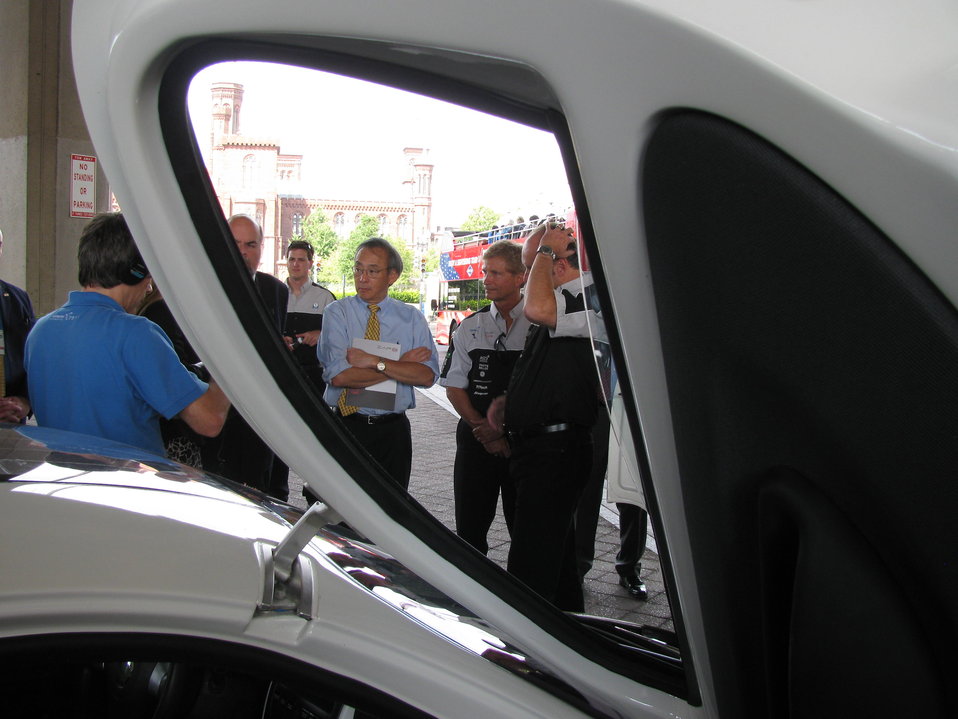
X Prize 054